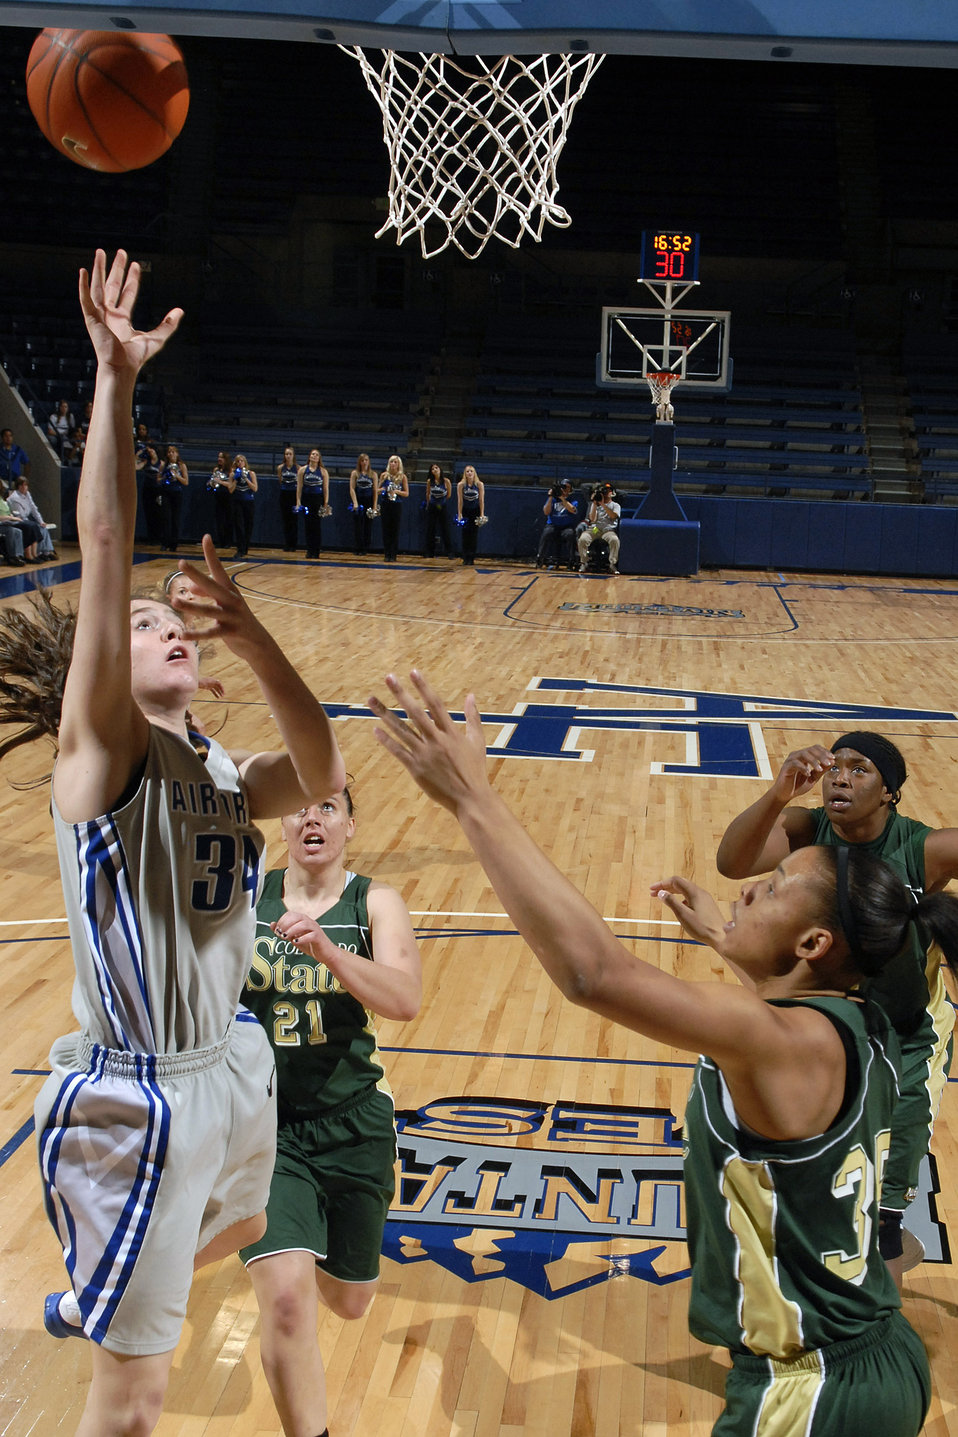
Women Falcons lose 55-50 to Colorado State

Senior Brooke Cultra drives for a layup during the Falcons 55-50 loss to the Colorado State Rams Jan. 20 at Clune Arena at the U.S. Air Force Academy, Colo. Cultra led Air Force in scoring with 11 points and grabbing six rebounds. The Falcons dropped to 0-5 in Mountain West Conference action and 4-14 overall.